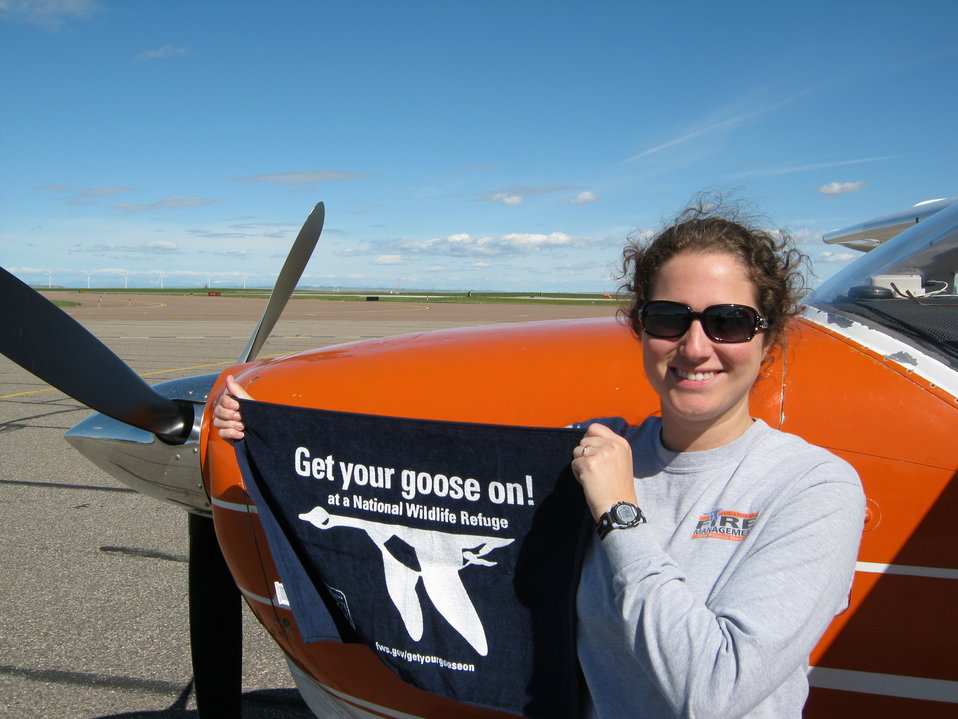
Get Your Goose On!

The goose takes flight at Benton Lake National Wildlife Refuge